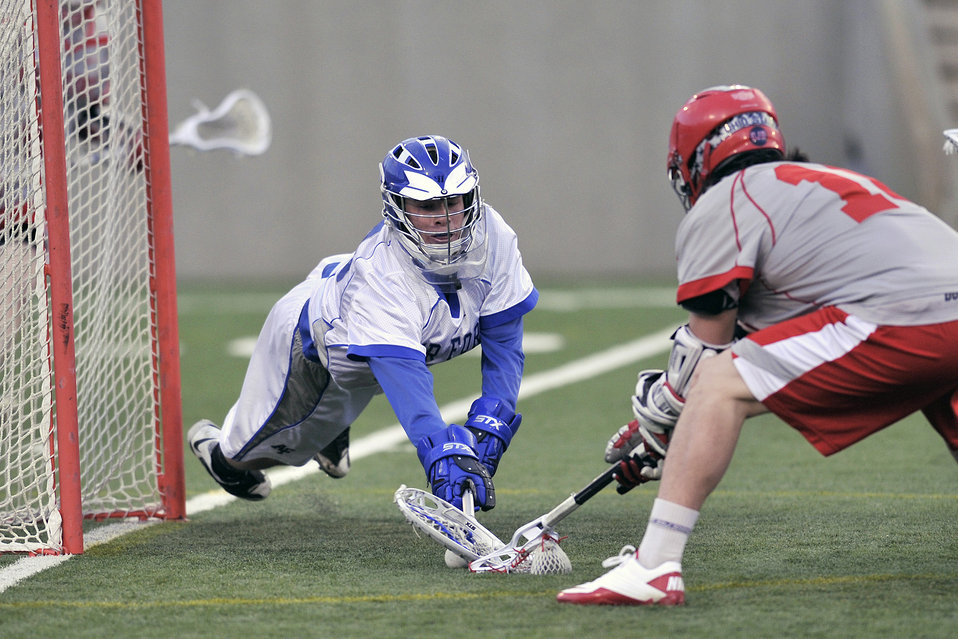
Falcons vs. Buckeyes

Falcons senior goalkeeper Brian Wilson makes a stop during first-period action against the Ohio State Buckeyes April 17, 2011, at Falcon Stadium in Colorado Springs, Colo.